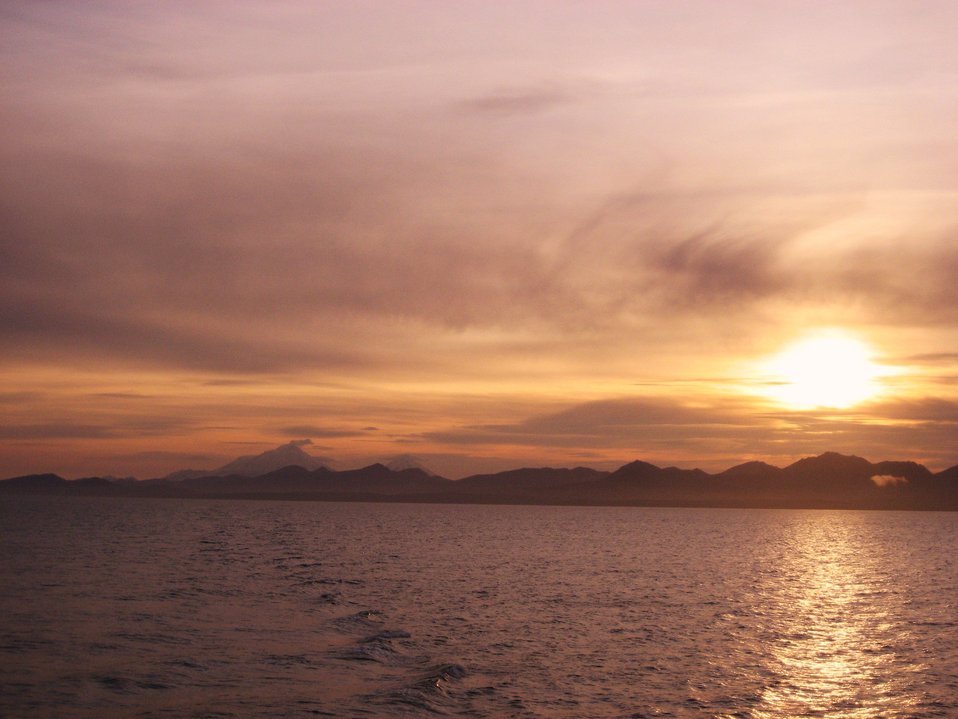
Alaska Peninsula sunset